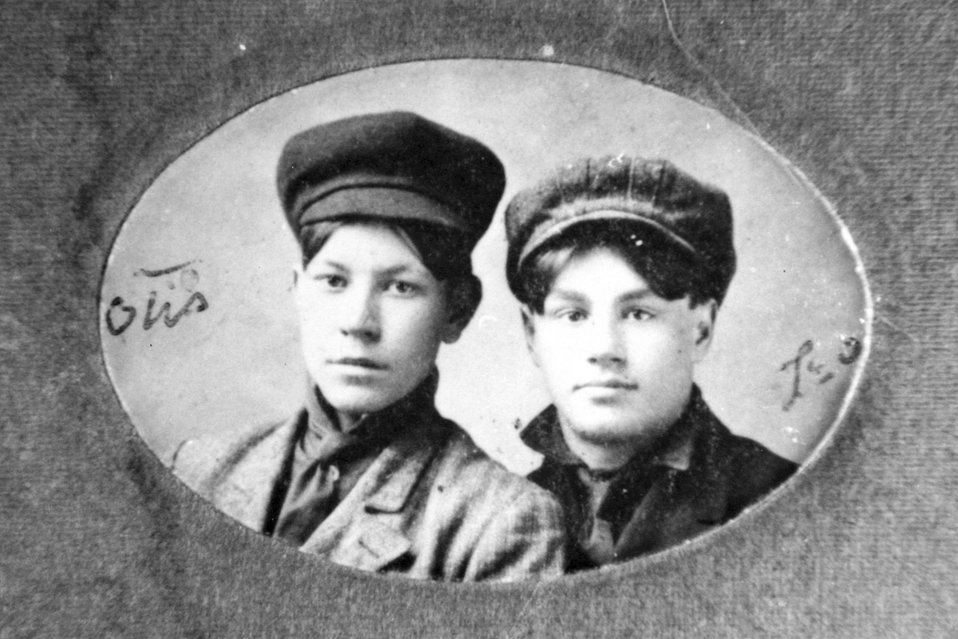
Otis and Leo Frey before coming West. C. 1905